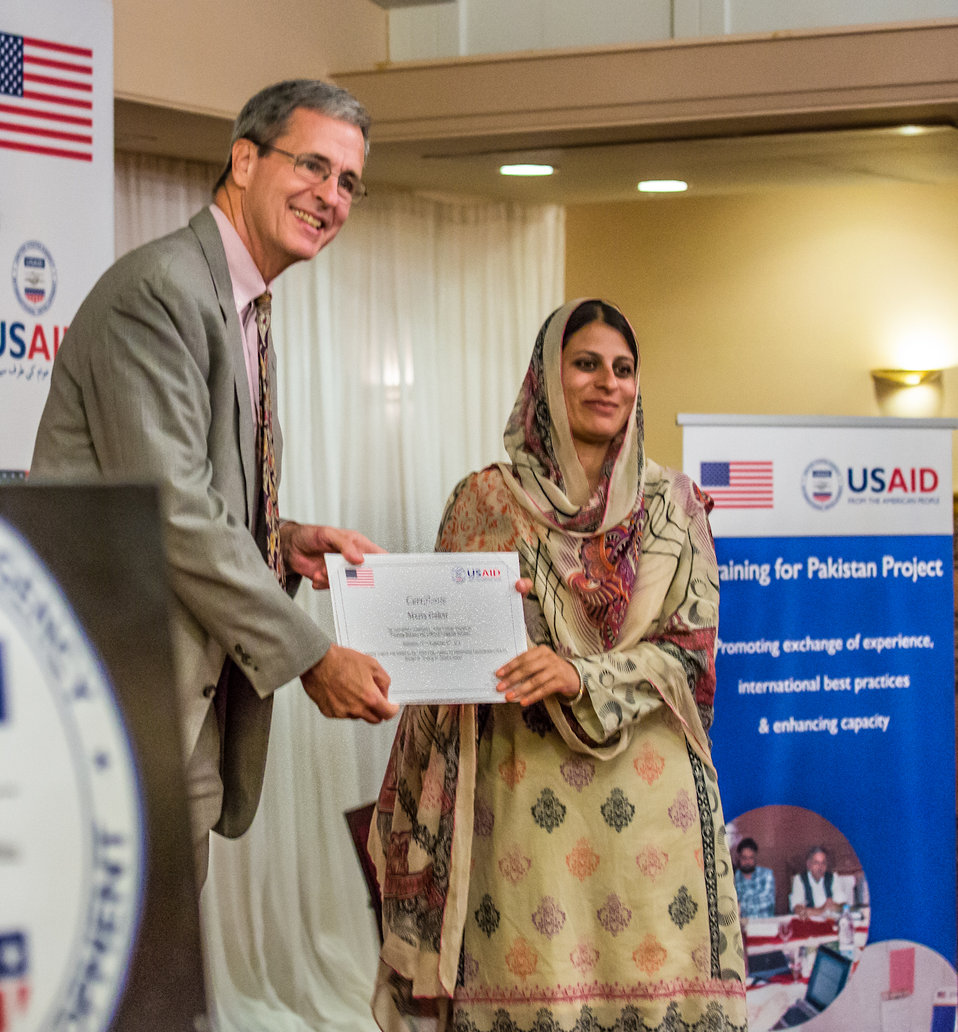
Islamabad, September 26 2012 - Jonathan Conly, USAID Pakistan Mission Director, presenting a certificate to a participant of the training program.